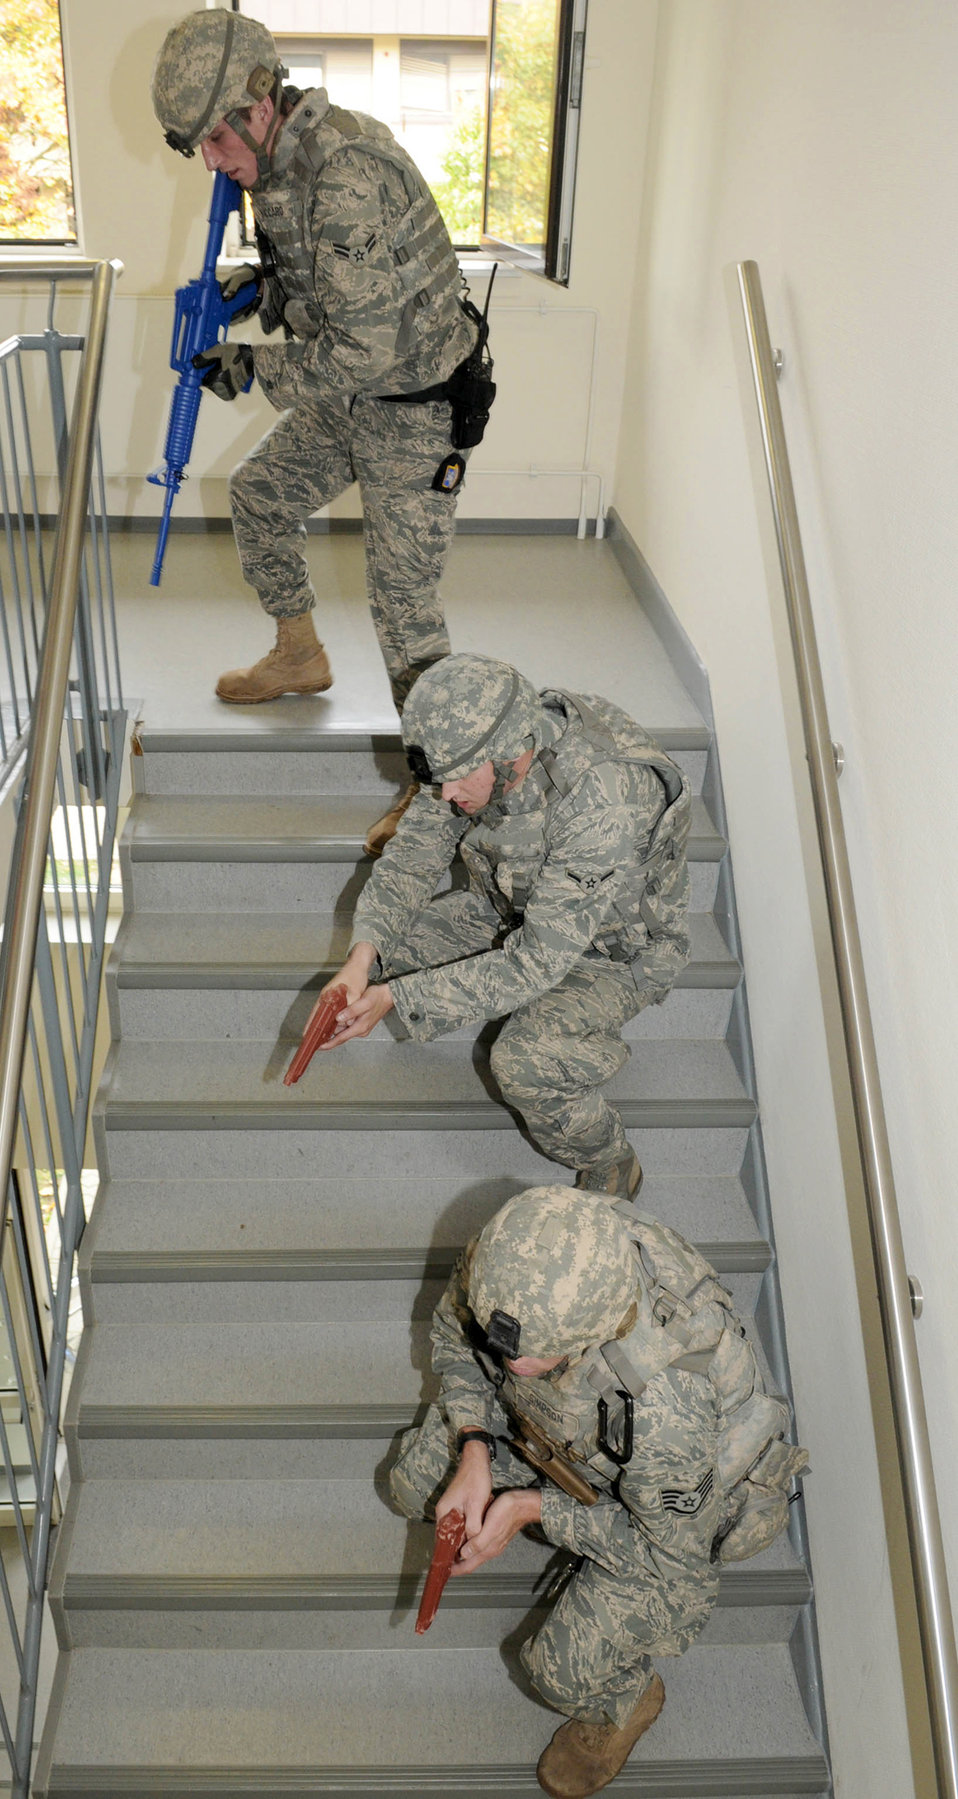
Security Airmen train to handle active shooter threats

Airman 1st Class Anthony Vaccaro (top), Airman Keith Struck and Staff Sgt. David Simpson move down a stairwell during active shooter training Oct. 4, 2010, at Spangdahlem Air Base, Germany. The training was designed to instruct security forces members how to quickly find and stop suspects who are shooting at people. Airmen Vaccaro and Struck are 52nd Security Forces Squadron patrolmen. Sergeant Simpson is a 52nd SFS K-9 handler.